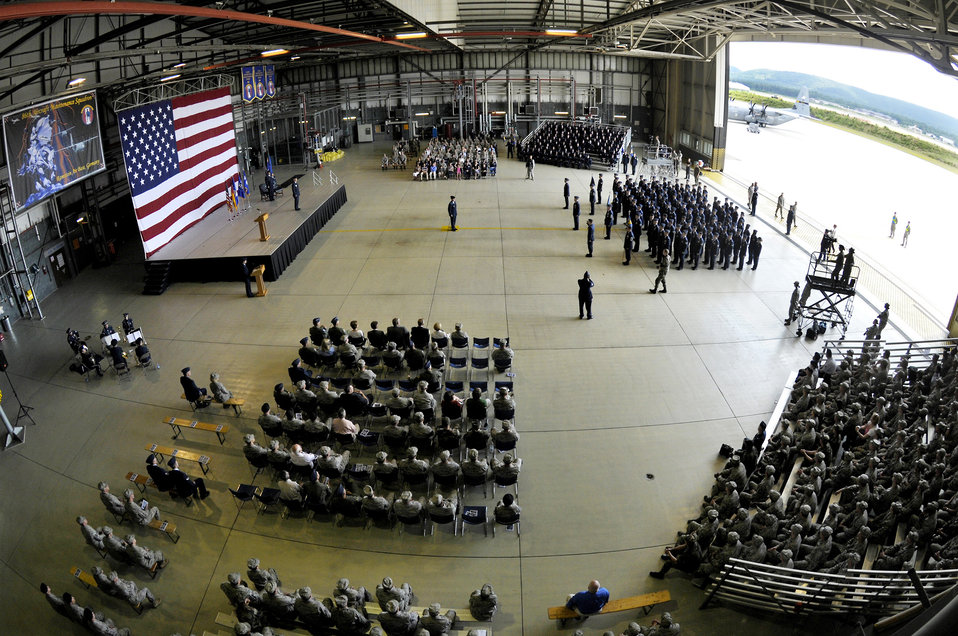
Ramstein officials stand up air ground operations wing

U.S. Air Forces in Europe officials redesignates the 435th Air Base Wing to the 435th Air Ground Operations Wing July 16 at Ramstein Air Base, Germany. The 435th AGOW is the first wing of its kind in U.S. Air Forces in Europe dedicated to supporting battlefield Airmen.